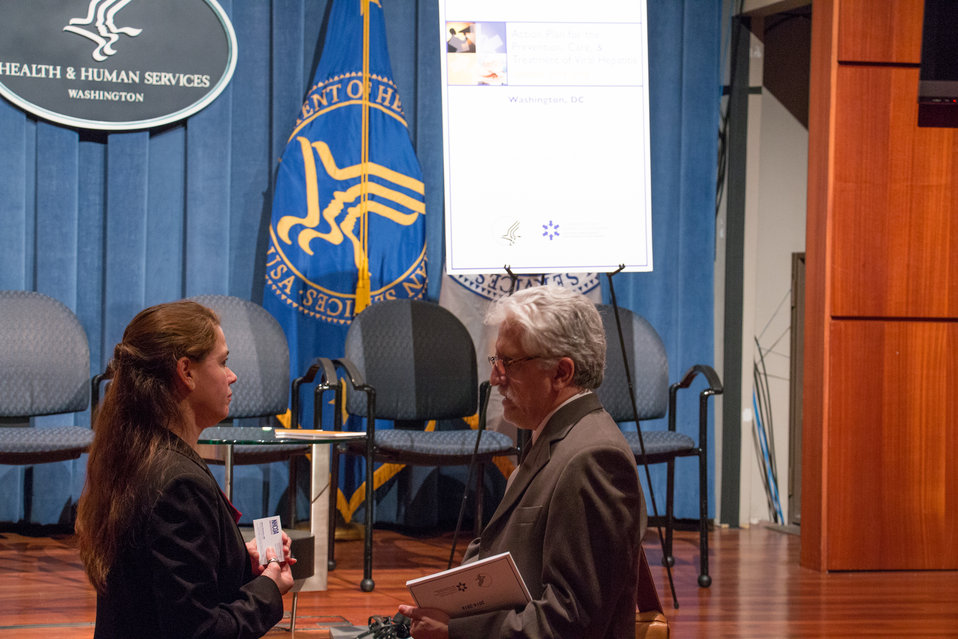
VHAP Launch (467 of 511)